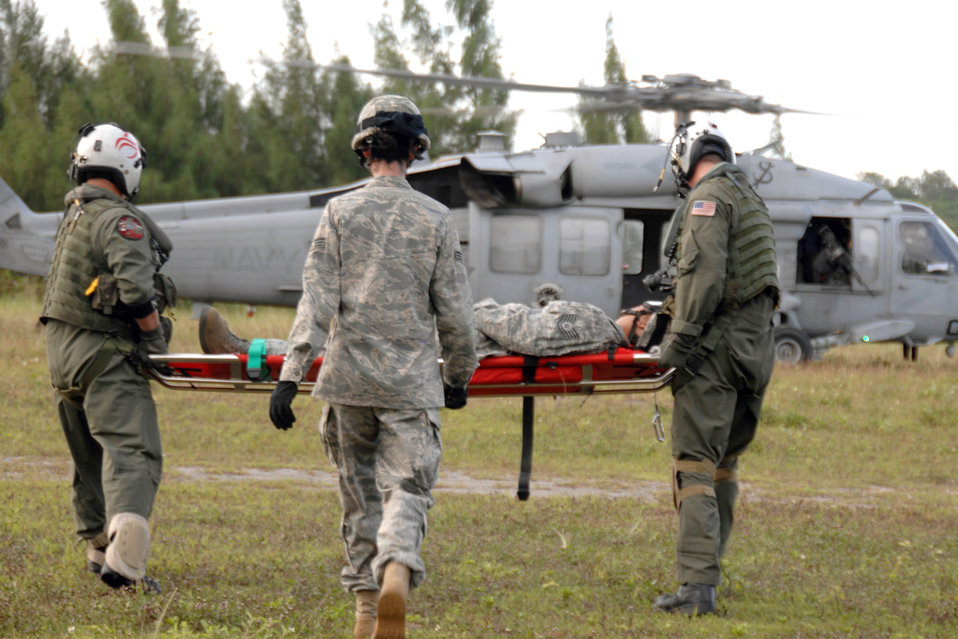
Airmen, Sailors train together for future relief efforts

Servicemembers assigned to the 36th Mobility Response Squadron and HSC-25 conduct medical evacuation training Oct. 13, 2010, at Northwest Field, Guam. The joint field training exercise was performed in an effort to interchange and familiarize themselves with each other's tactics, techniques and procedures to be able to interoperate and conduct joint humanitarian assistance/disaster relief missions in the Pacific region.